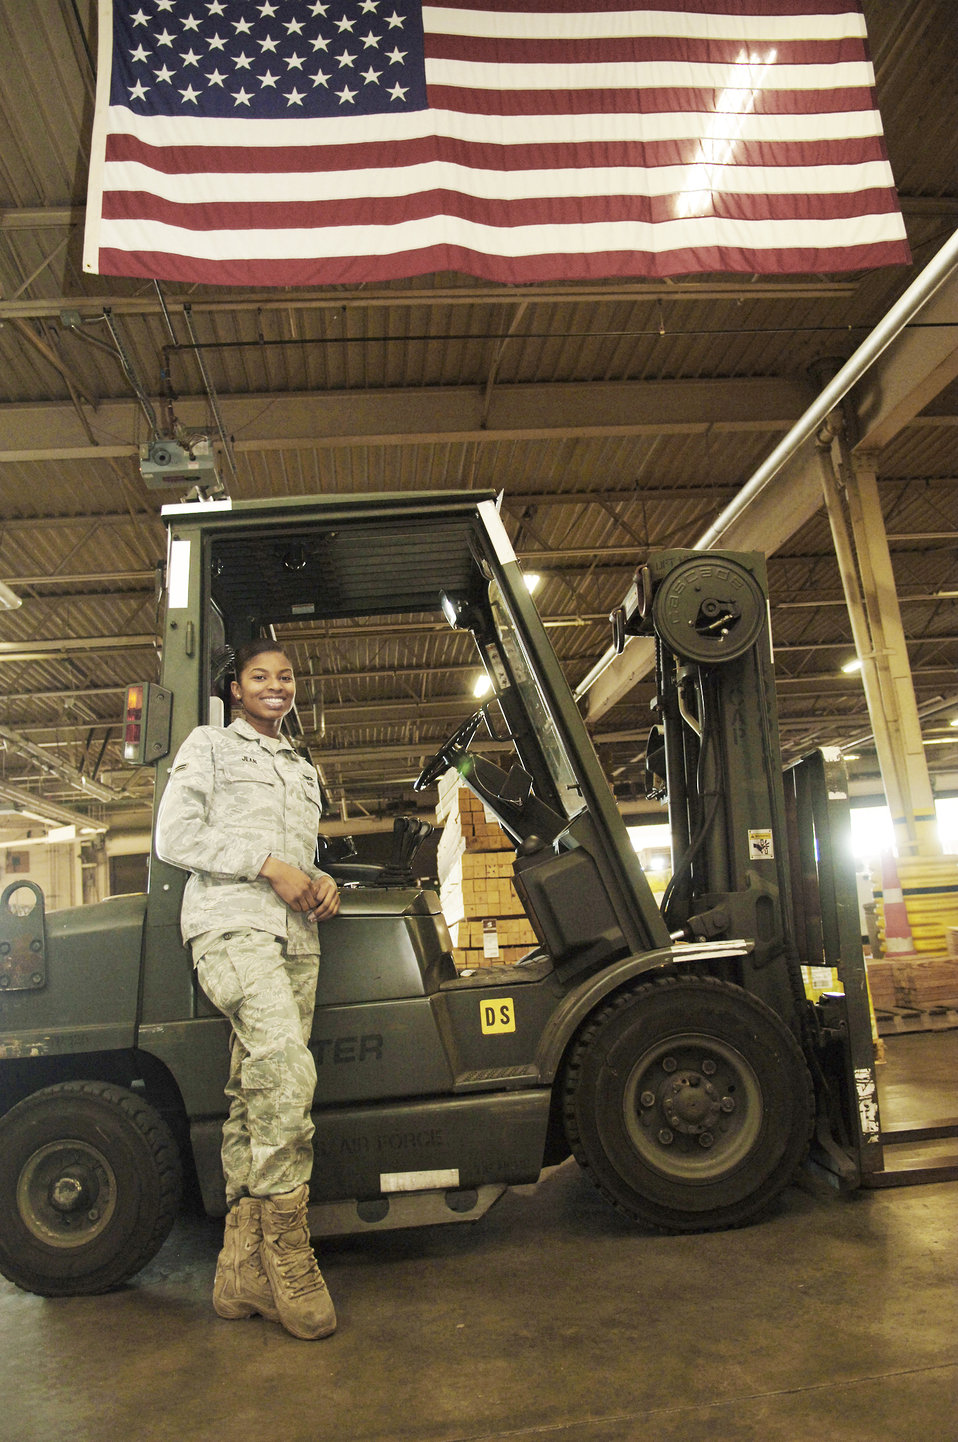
Relief effort hits home for Haitian-American Airman

Airman 1st Class Samantha Jean is a traffic management apprentice with the 437th Aerial Port Squadron at Charleston Air Force Base, S.C. Originally from Haiti, she has recently become an American citizen and has been assisting the Haitian earthquake relief effort from Charleston AFB working in the packing and crating section of her squadron.